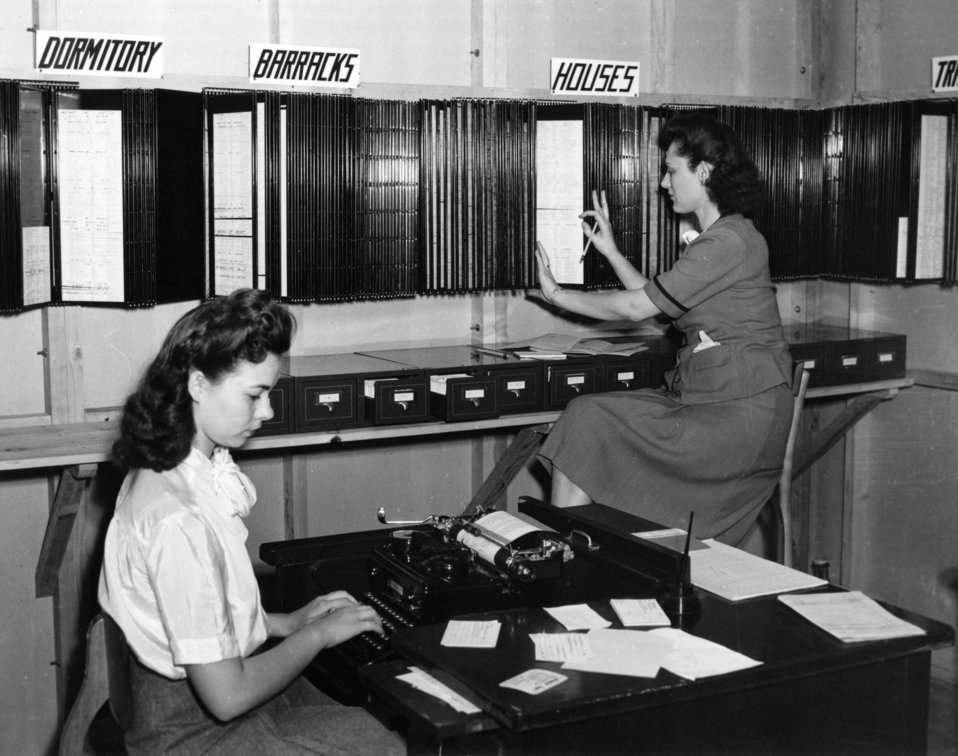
Services at Oak Ridge